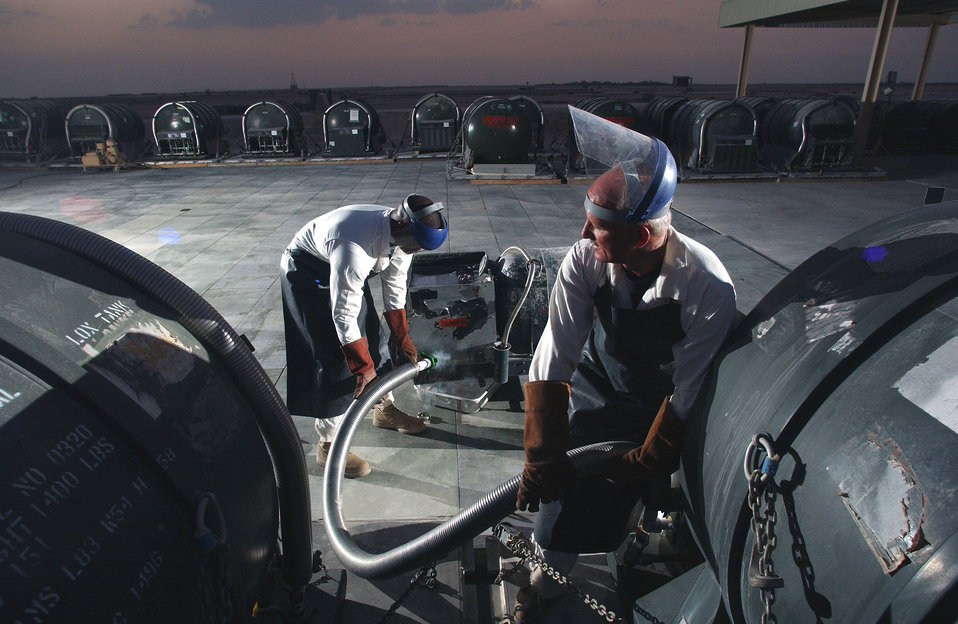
Breathing oxygen

SOUTHWEST ASIA -- Staff Sgt. Anthony Anderson (left) and Tech. Sgt. William McLeod attach a cryogenic supply hose to an oxygen servicing cart. Oxygen remains in a liquid form at temperatures below minus 297 degrees Fahrenheit. At ambient temperatures, the oxygen boils and releases air-breathable oxygen, which is normally used in pressurized aircraft. Both airmen are at a forward-deployed location. Anderson is from the 60th Logistics Readiness Squadron at Travis Air Force Base, Calif., and McLeod is from the 99th Supply Squadron at Nellis AFB, Nev.